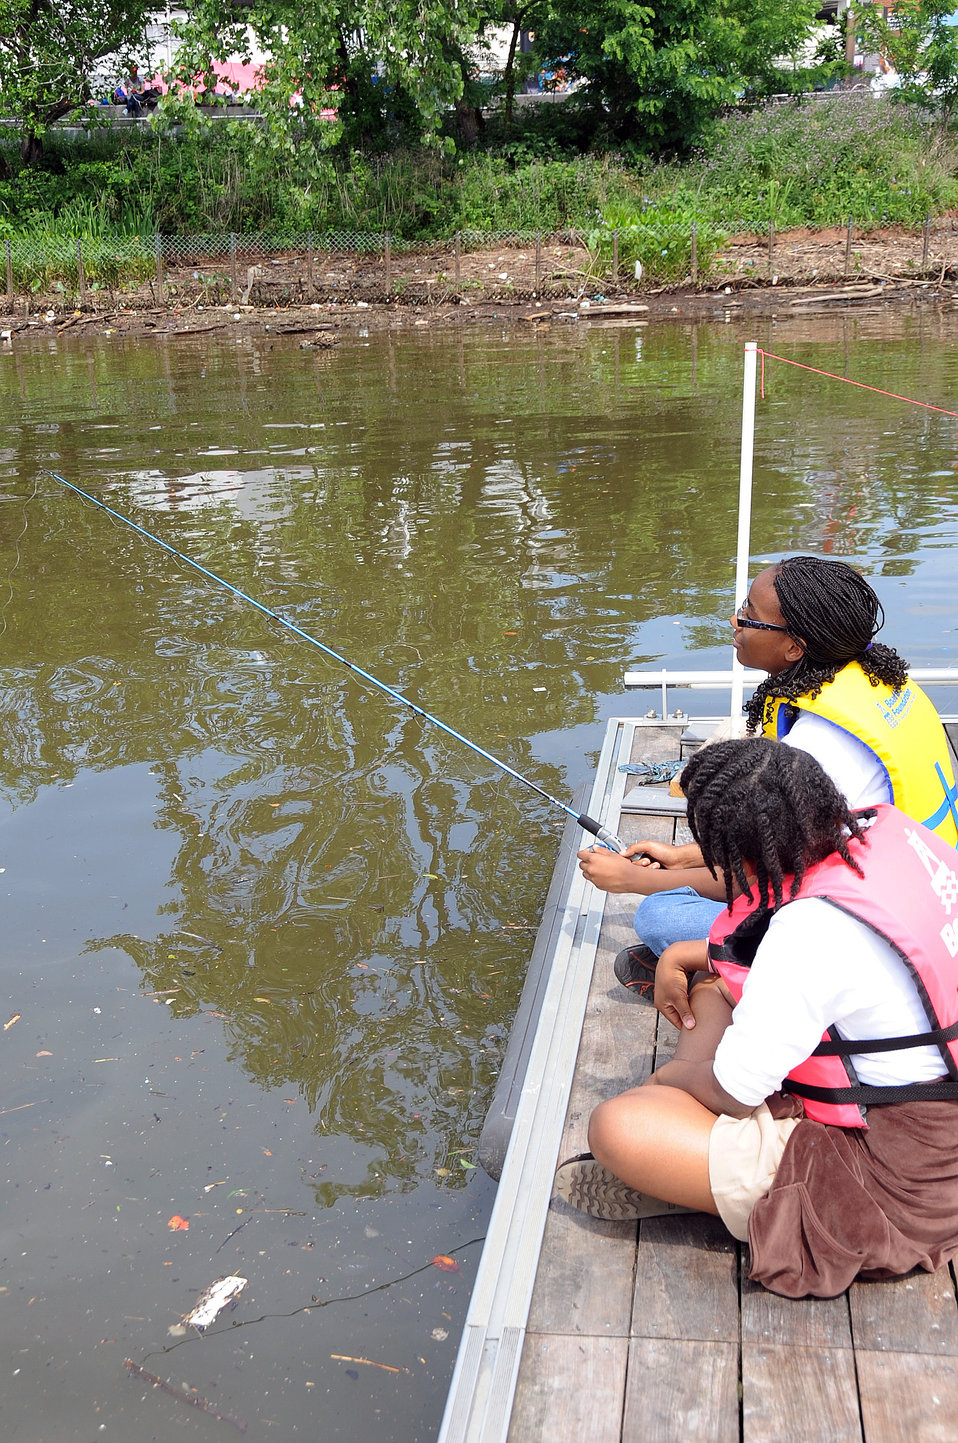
2013 National Fishing and Boating Week

Local students prepare to enjoy fishing at the annual kick-off of National Fishing and Boating Week on the Anacostia River in Washington D.C.